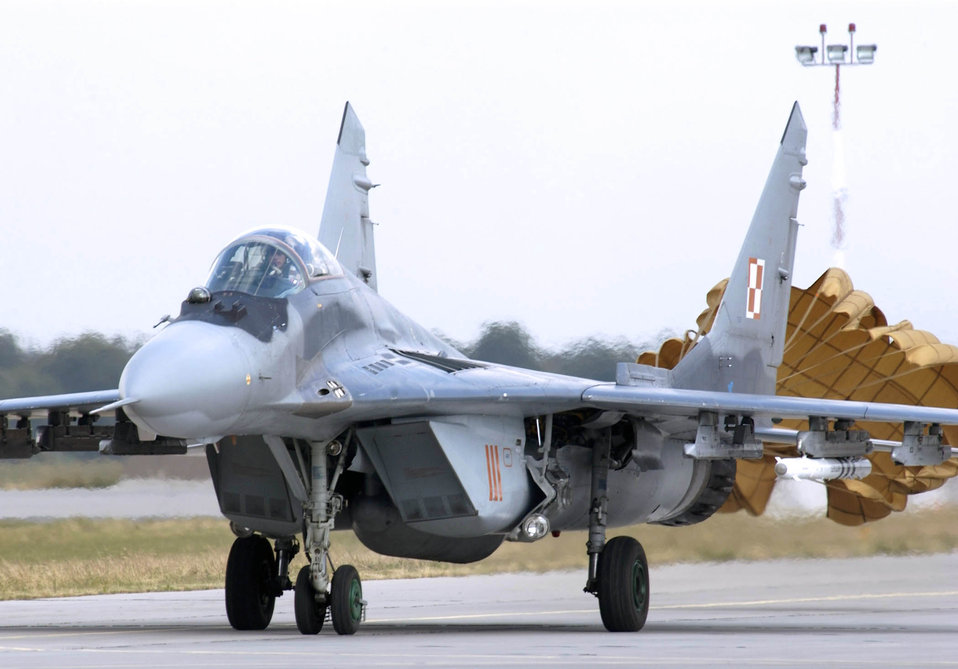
Guardsmen familiarize Polish airmen with F-16

POZNAN, Poland -- A Polish air force MiG-29 taxis in with parachute in tow after finishing a mission here. Airmen from the Illinois Air National Guard's 183rd Fighter Wing are familiarizing Polish airmen with the F-16 Fighting Falcon during the U.S. European Command exercise Sentry White Falcon 2005 through June 17. In 2006, the Polish air force will start receiving their own F-16s that will begin replacing their Soviet-made MiG fighters as the country modernizes its military to NATO standards.